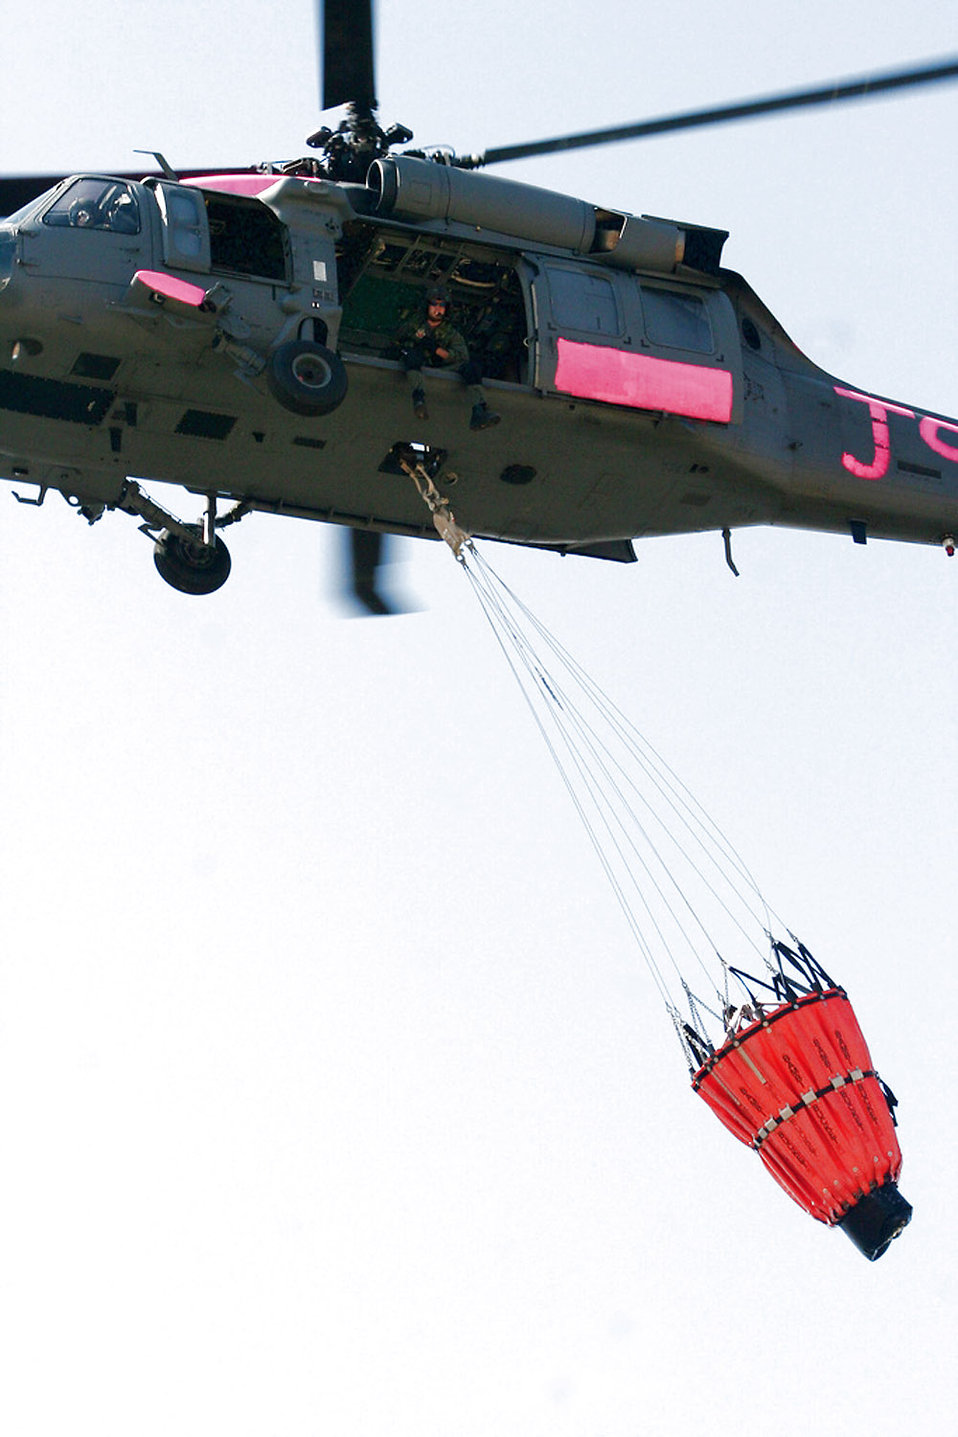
Fighting wildfires, saving lives

An HH-60G Pave Hawk flies with a water bucket attached July 2 near Sacramento, Calif. The aircrews trained with water buckets to become certified for firefighting suppression duty. The HH-60G is from the 129th Rescue Wing of the California Air National Guard.